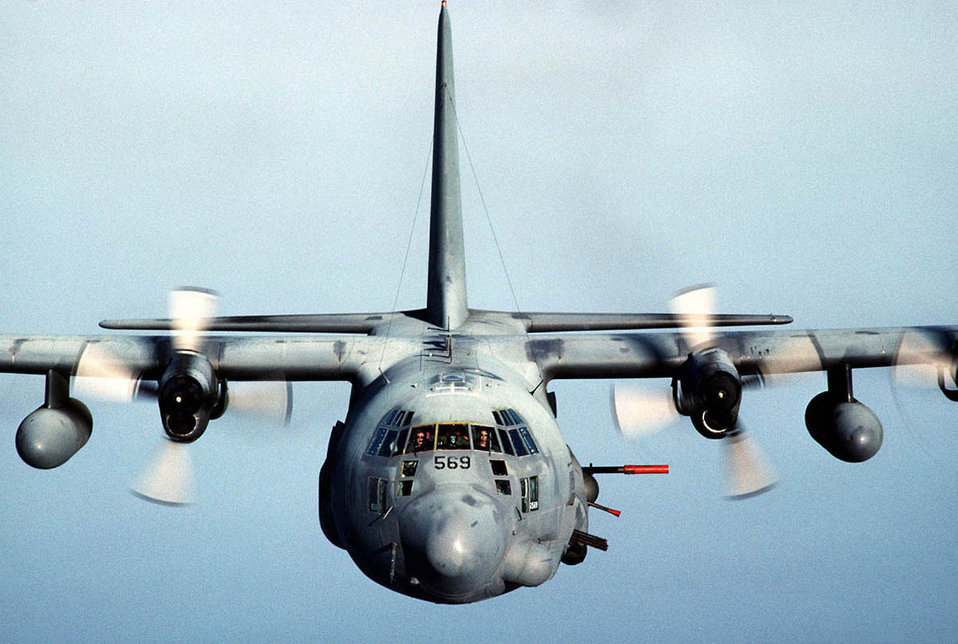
AC-130 Gunship

The AC-130 gunship's primary missions are close air support, air interdiction and force protection. Missions in close air support are troops in contact, convoy escort and urban operations. Air interdiction missions are conducted against preplanned targets or targets of opportunity. Force protection missions include air base defense and facilities defense.